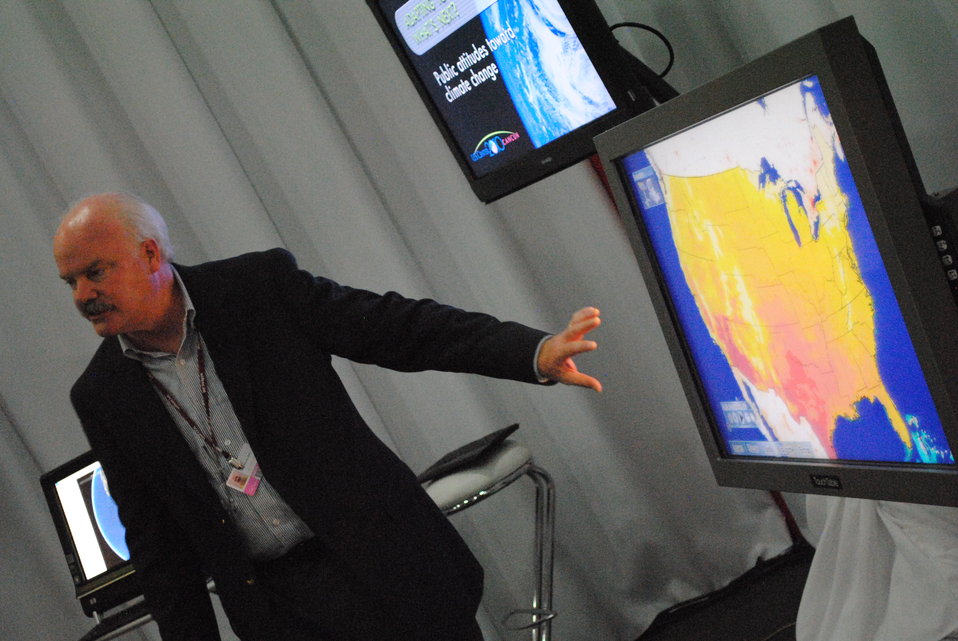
Dave Jones Demonstrates How Climate Change Affects the United States

Dave Jones, President and CEO of Storm Center Communications, Inc., uses the Envirocast Vision Touch Table to demonstrate how climate change is affecting the United States in the Living Room of the U.S. Center at COP-16 in Cancun, Mexico, on November 30, 2010.